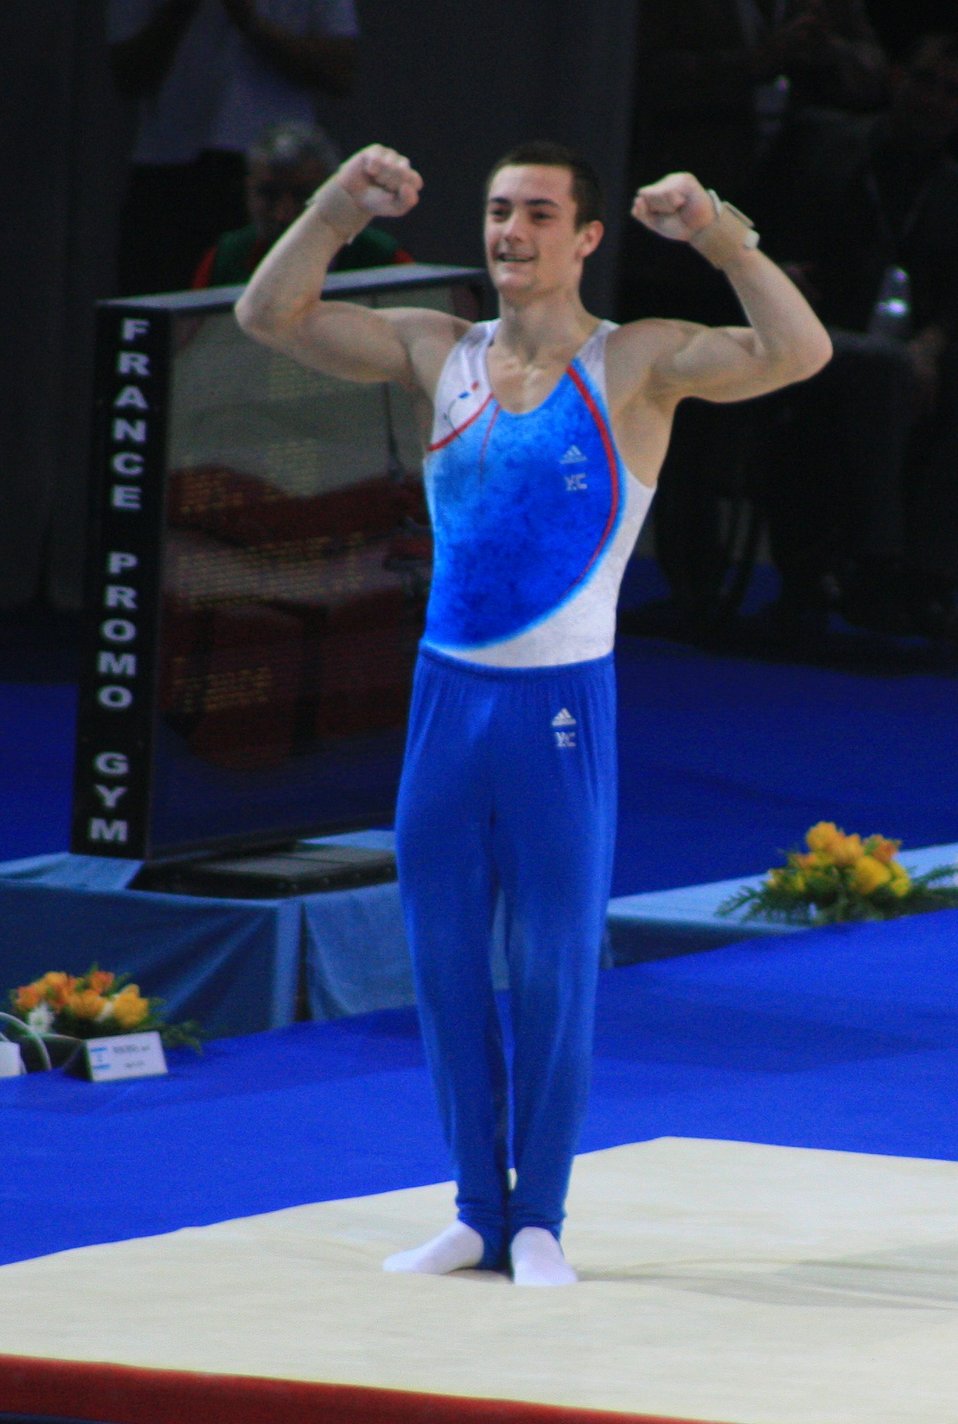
Fran√ßais†: Cyril Tommasone apr√®s son passage en cheval d'ar√ßon en qualifications des 17e Internationaux de France en 2010.